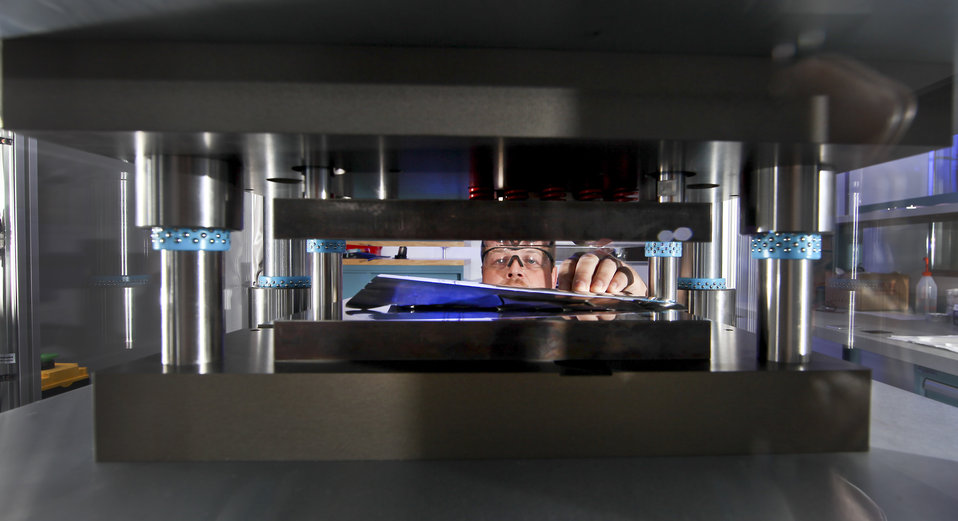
Better batteries may get to market sooner with help from a new R&D manufacturing facility at Oak Ridge National Laboratory.

The facility feature's two chambers totaling 1,400 square feet of space along with state-of-the -art battery manufacturing equipment. One chamber allows researchers to maintain relative humidity levels of between 0.5 and 15 percent. The room houses equipment that allows for mixing of various slurries, stabilization, and coating and drying. The second chamber provides a dew point of minus-40 degrees Celsius, which translates to a relative humidity of 0.5 percent. This is necessary to prevent moisture from entering and degrading battery cells. The pouches are then trimmed and sealed through a heating and vacuum process.